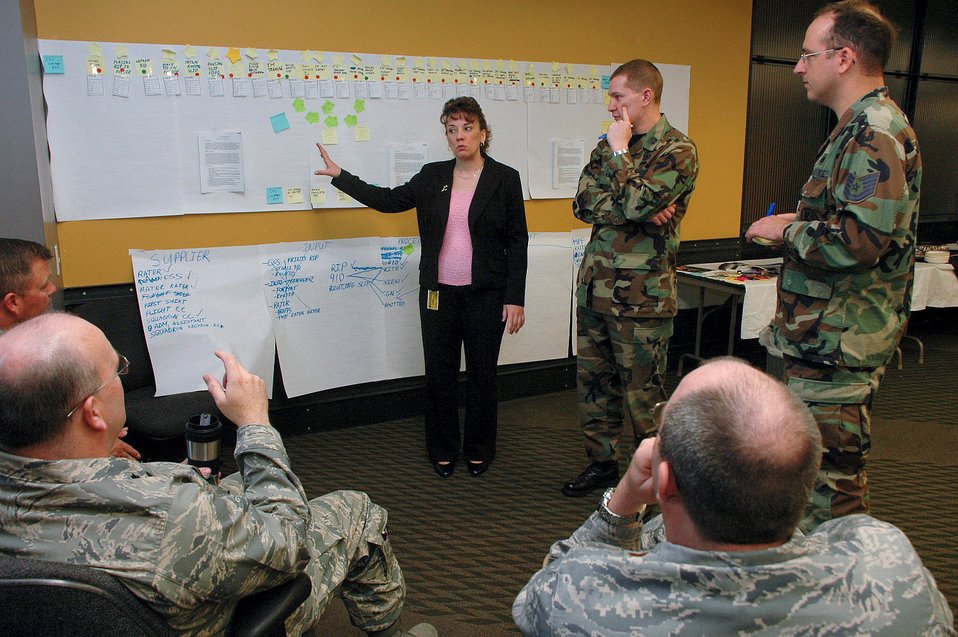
Guard, Harley-Davidson join forces to improve processes

Linda Berry leads a group discussion on the value-stream mapping portion May 7 at Harley-Davidson University in Milwaukee. Value-stream mapping is a process where each individual step of a job is listed on a post-it note on a wall and examined for any areas of wasted time or effort. Ms. Berry is an Air Force Smart Operations for the 21st century instructor.